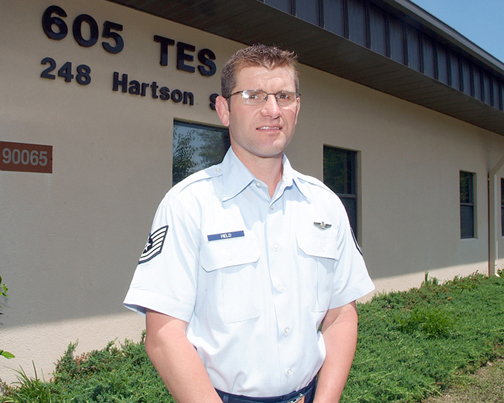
Wrestler takes it to the mat

Tech. Sgt. Jay Field poses for a photo in front of the 605th Test and Evaluation Squadron building May 17, 2010 at Hurlburt Field, Fla. Sergeant Field, an Air Force wrestling team coach, saved the Air Force team from forfeiting all points in the team standings by taking the place of an absent Air Force wrestler in the Armed Forces Championship in Colorado.